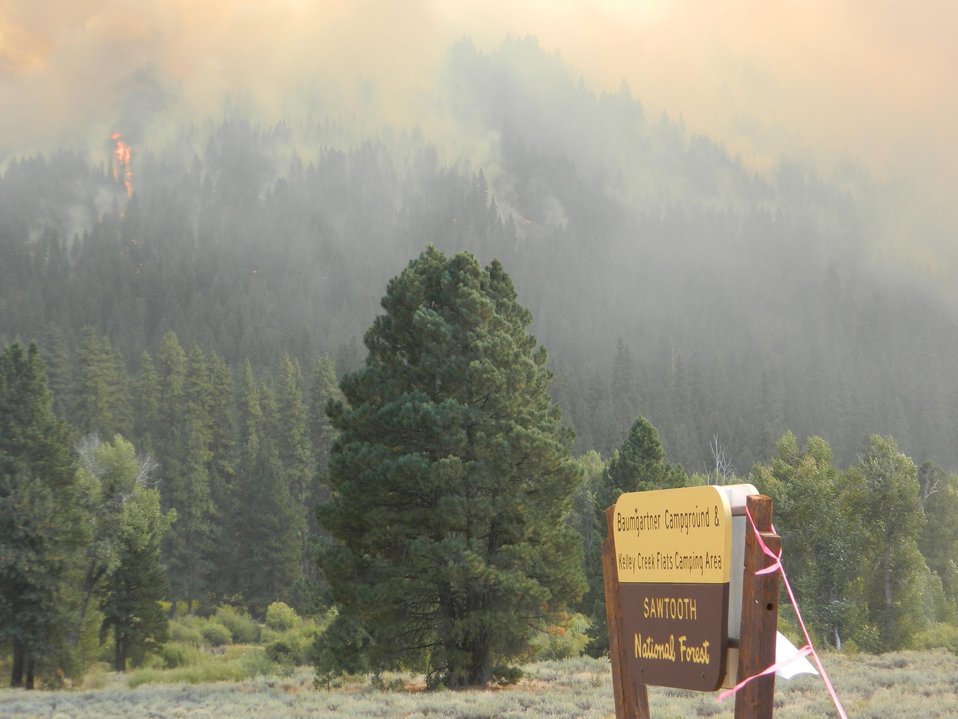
The Kelley Fire in the Sawtooth National Forest near Featherville, ID began on Aug. 24, 2013 by lightning and has consumed approximately 17,346 acres and is 97% contained.